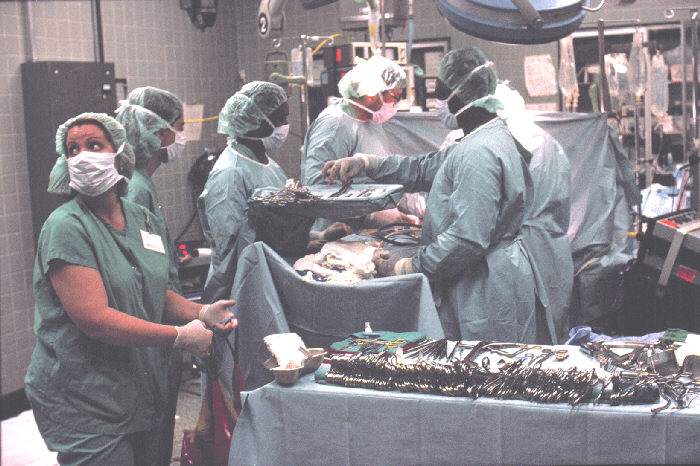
Operating Room Scene.